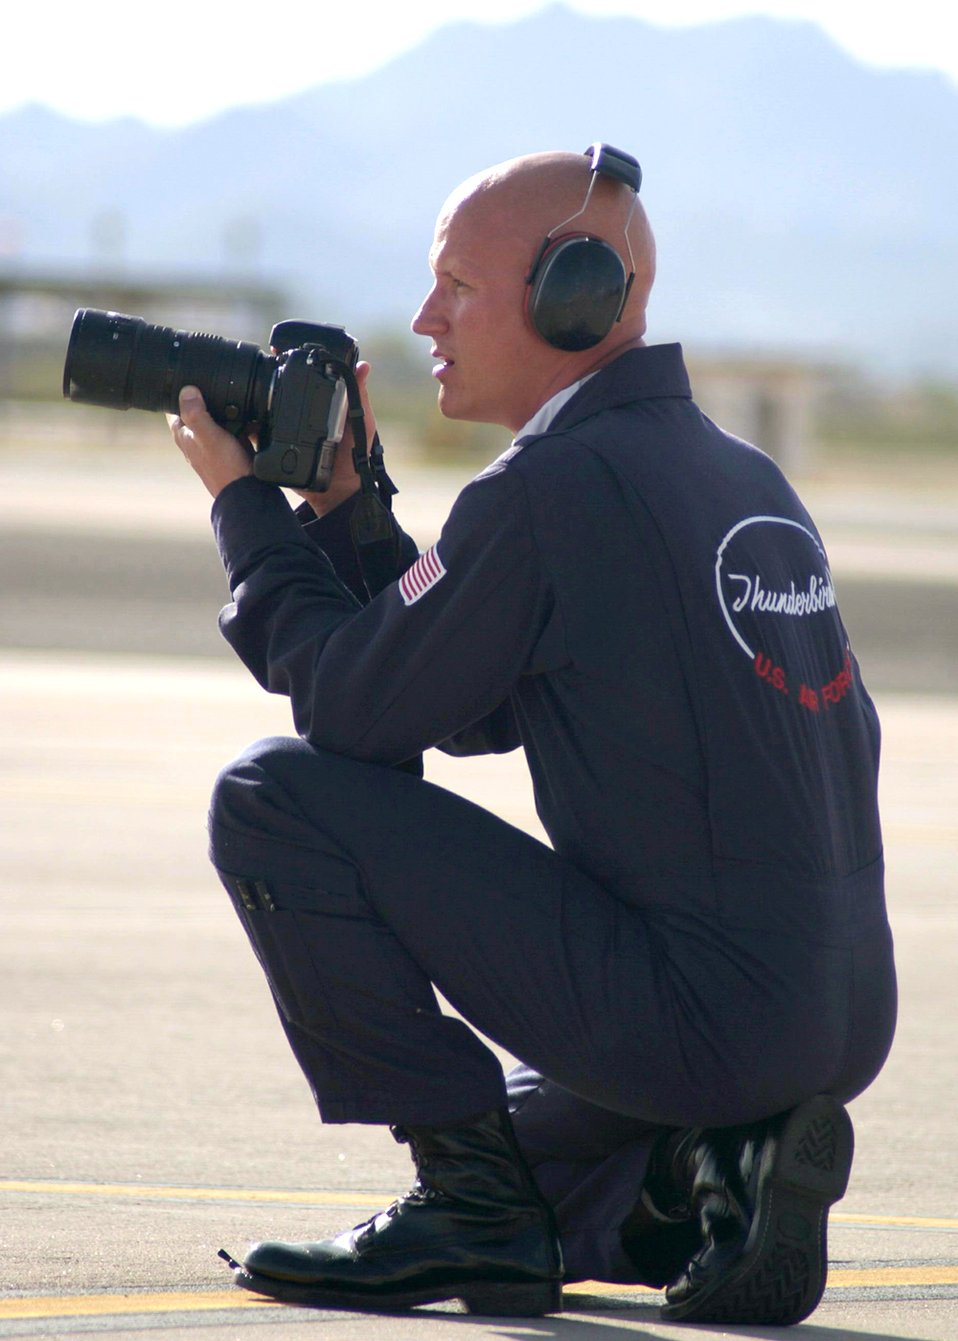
Thunderbirds

DAVIS-MONTHAN AIR FORCE BASE, Ariz. -- Tech. Sgt. Sean White takes photos of the Thunderbirds performance at the Aerospace and Arizona days here April 2. He is a photographer assigned to the Thunderbirds team at Nellis Air Force Base, Nev.